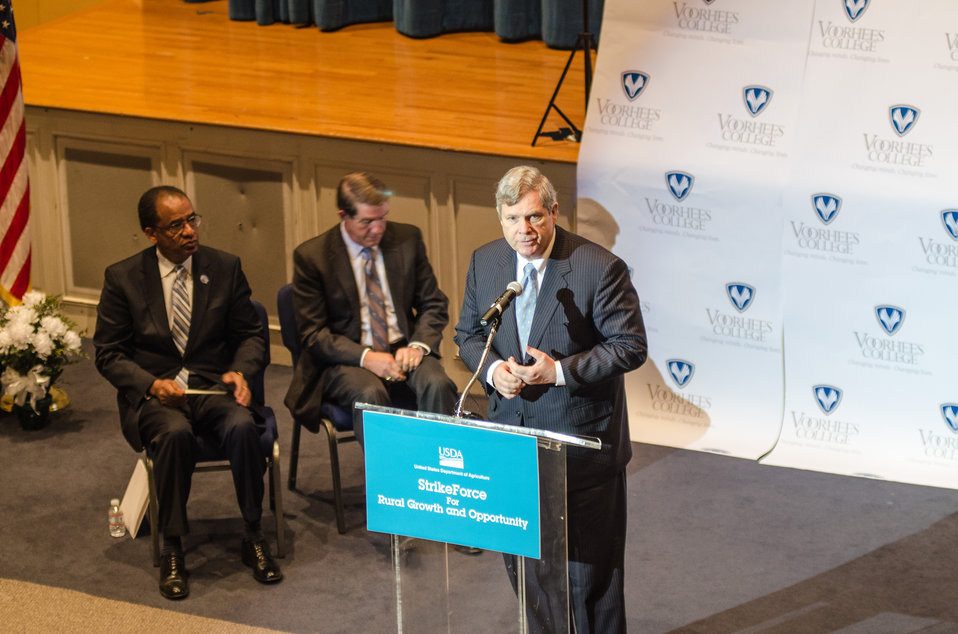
Agriculture Secretary Tom Vilsack speaks at the U.S. Department of Agriculture's (USDA) Strike Force for Rural Growth and Opportunity event held at Voorhees College in Denmark, SC, on Tuesday, March 26, 2013. The primary goal of the Strike Force initiative is to increase partnership with rural communities and leverage community resources in targeted, persistent poverty areas. Vilsack noted that through the Strike Force initiative, USDA will do more to partner with local and state governments and community organizations on projects that promote economic development and job creation.